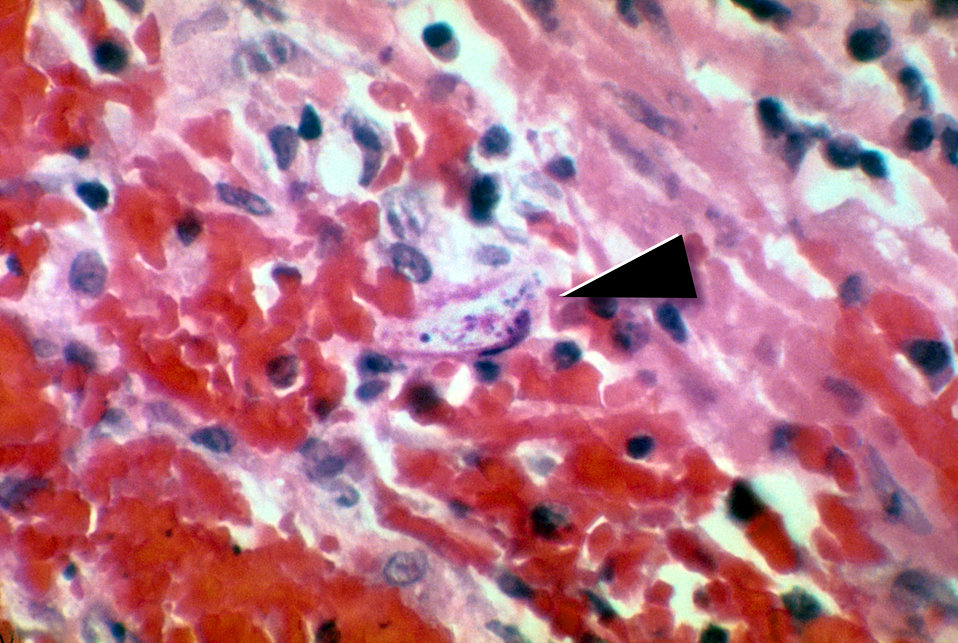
This micrograph reveals a Strongyloides stercoralis parasite embedded in the intestinal mucosa.